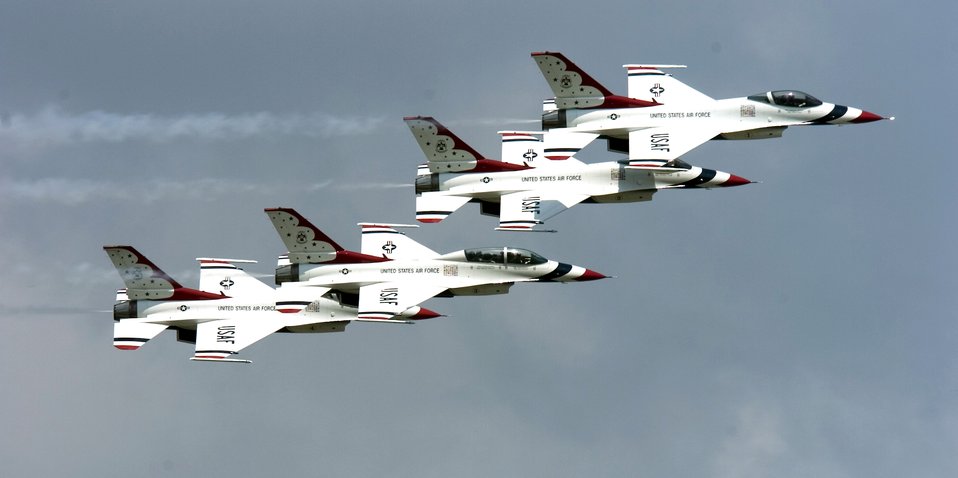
Air Force Week concludes in St. Louis

The Thunderbird trail formation passes in review during a practice show at Scott Air Force Base, Ill., on Aug. 11.